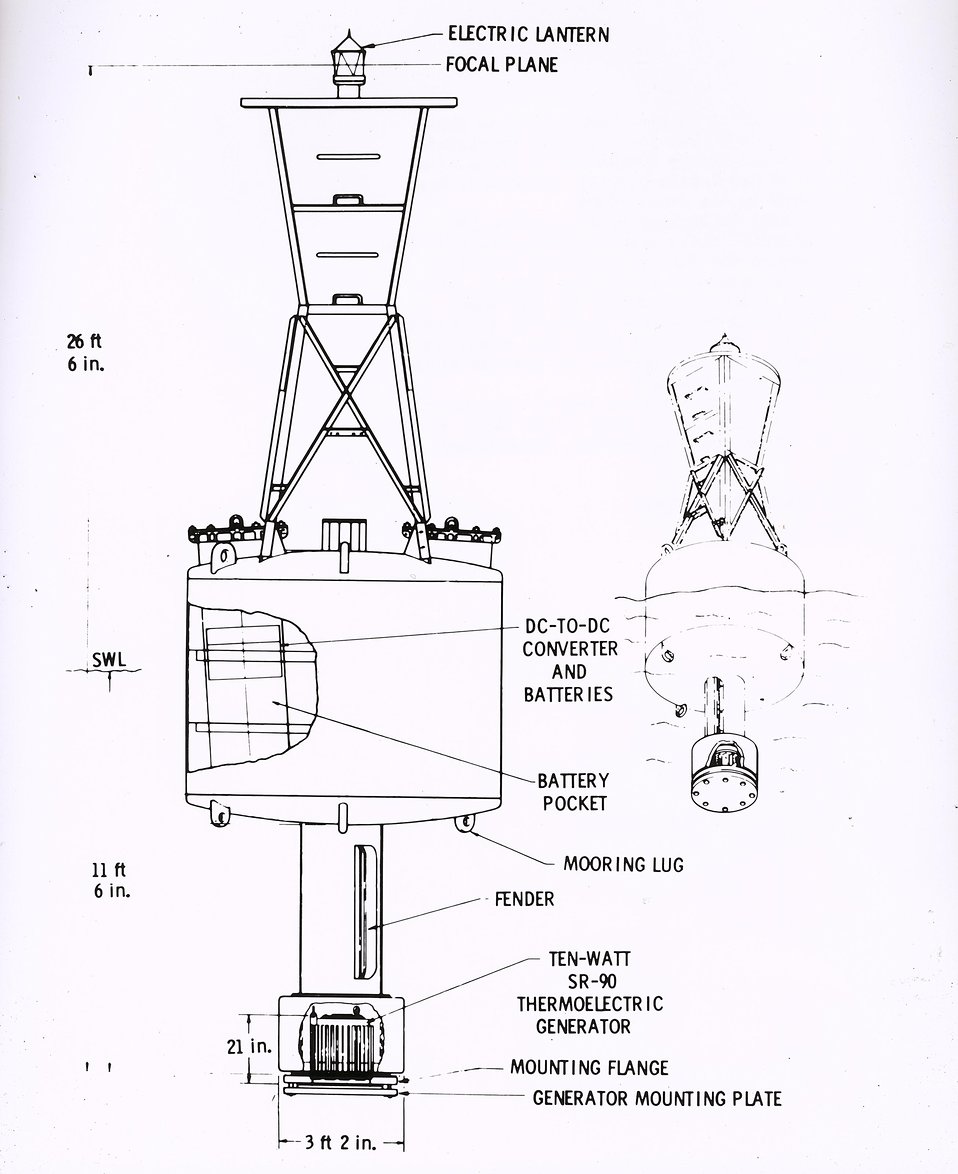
The world's first atomic-powered buoy is shown in this drawing.